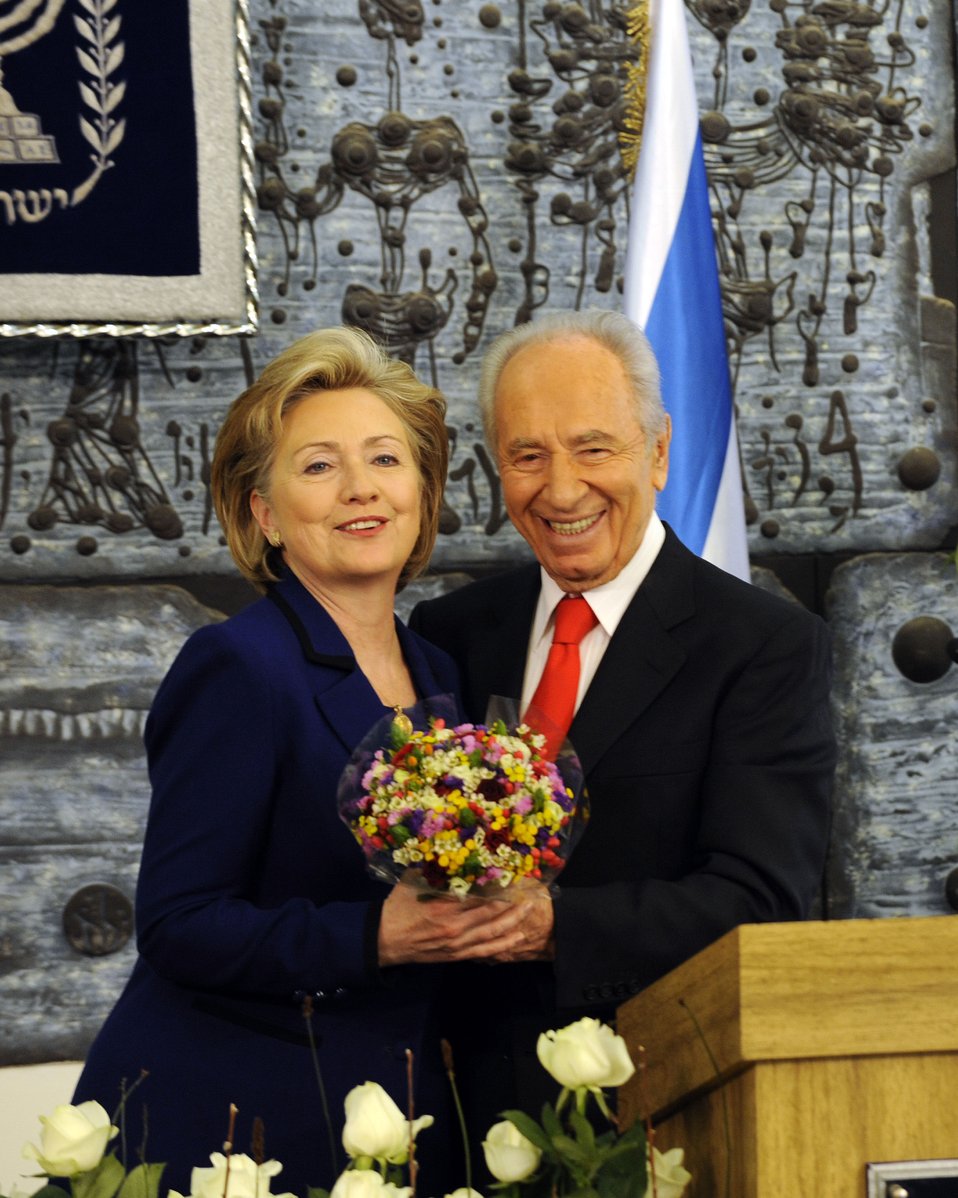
Secretary Clinton With President of Israel

U.S. Secretary of State Hillary Rodham Clinton with the President of Israel, Shimon Peres, at the President's Residence, Jerusalem March 3, 2009.